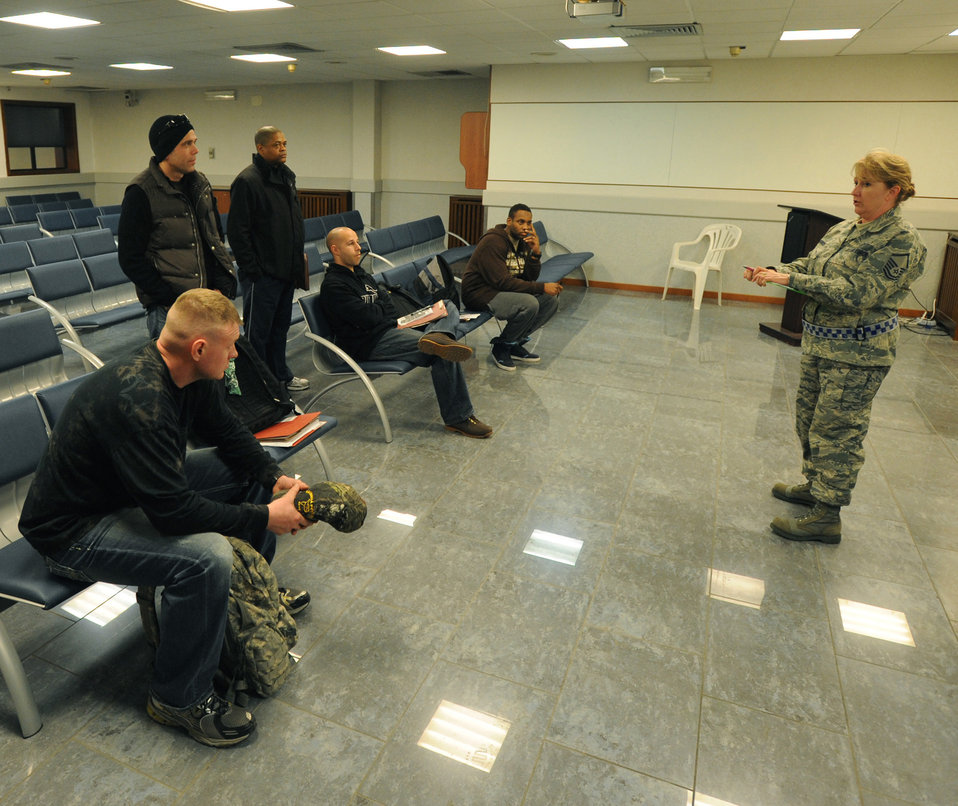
Drive Safe.

Master Sgt. Scharalene Carroll, 31st Fighter Wing Safety Office ground safety manager, provides a driving safety brief at Aviano Air Base, Italy to personnel from Royal Air Force Lakenheath March 20, 2011. Joint Task Force Odyssey Dawn is the U.S. Africa Command task force established to support the larger international response to the unrest in Libya. A broad coalition of nations are partnering to enforce U.N. Security Council Resolution (UNSCR) 1973, which authorizes all necessary means to protect civilians in Libya under threat of attack by Qadhafi regime forces. JTF Odyssey Dawn is commanded by Admiral Samuel J. Locklear, III.